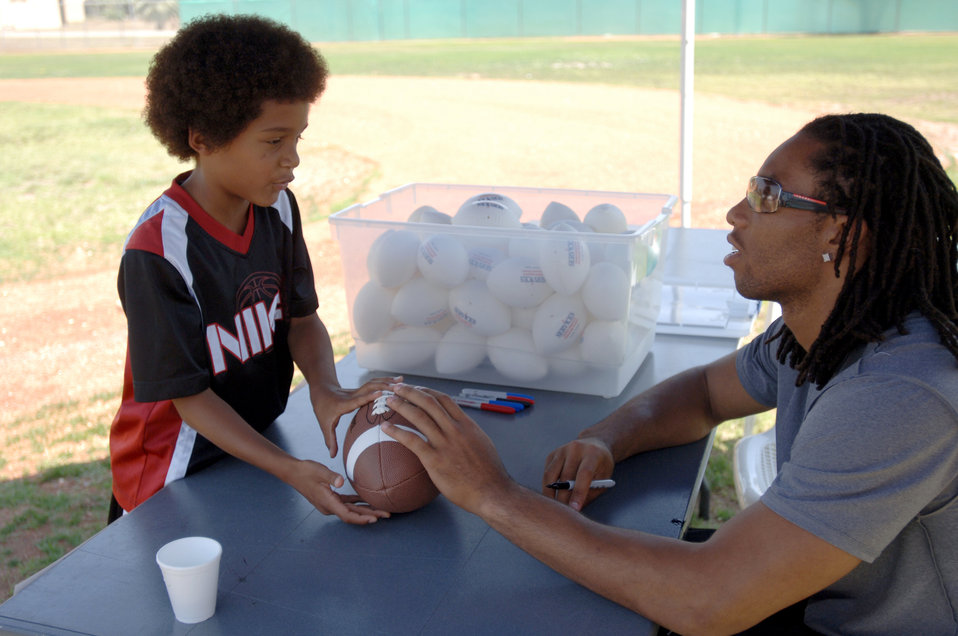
Arizona Cardinal visits Incirlik

Eight-year-old DeShaun Moorer hands Arizona Cardinals wide receiver Larry Fitzgerald a football to sign during an autograph session at Incirlik Air Base, Turkey, on Wednesday, June 21.